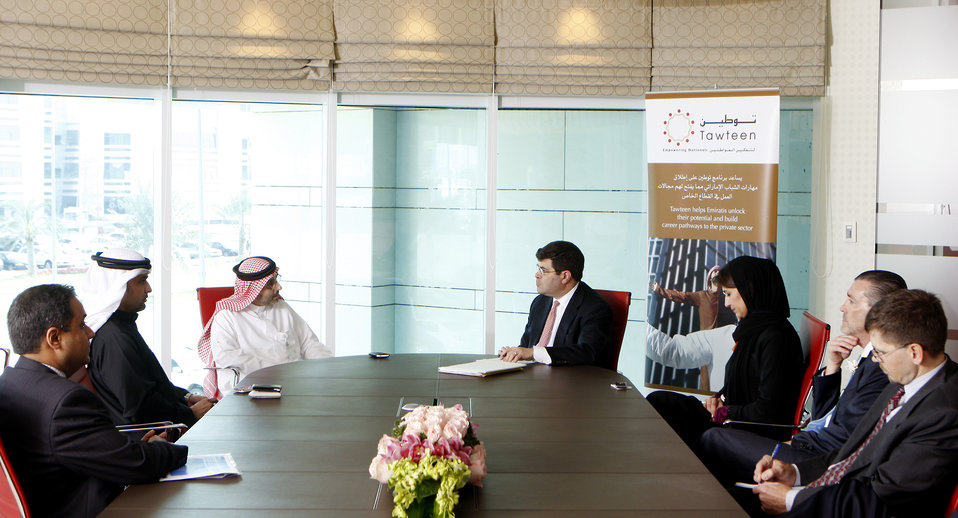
representatives from leading Abu Dhabi organizations

On Monday, February 15, Deputy Secretary Wolin in Abu Dhabi, UAE meets with representatives from leading Abu Dhabi organizations spearheading initiatives that encourage and support United Arab Emirates (UAE) citizens to pursue meaningful private sector employment opportunities.